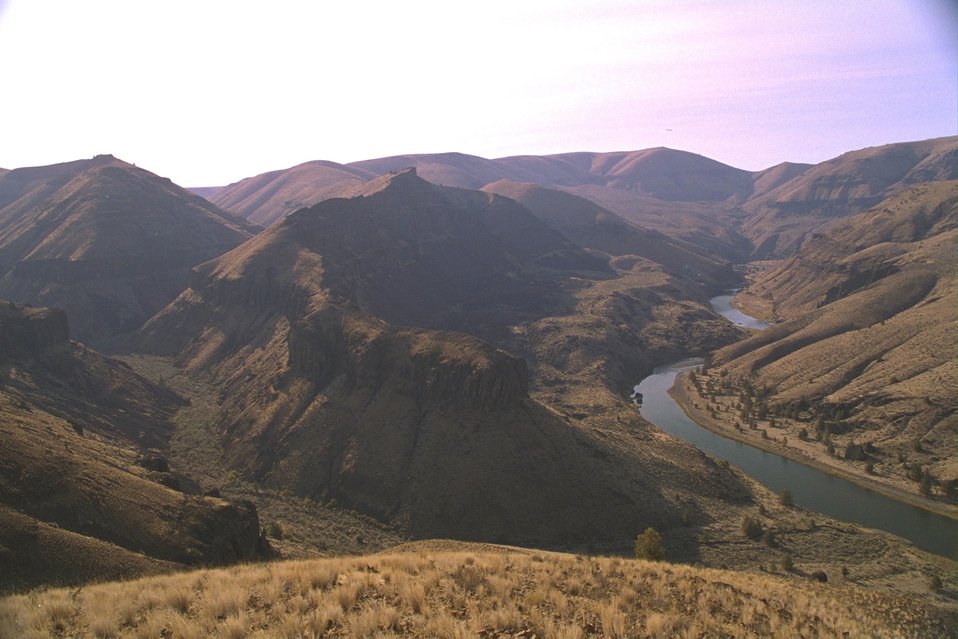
Long shot looking up the John Day River from viewpoint up in the hills.